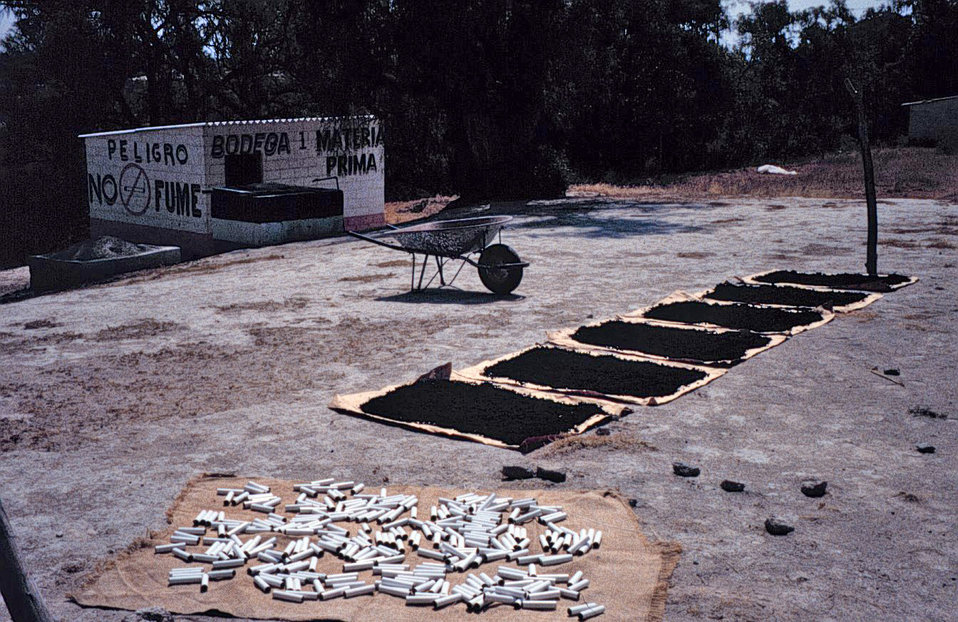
This 1997 photograph shows hand-mixed gunpowder and fireworks drying in the open sun at a traditional family-operated fireworks manufacturing shop in Tultepec, Mexico.